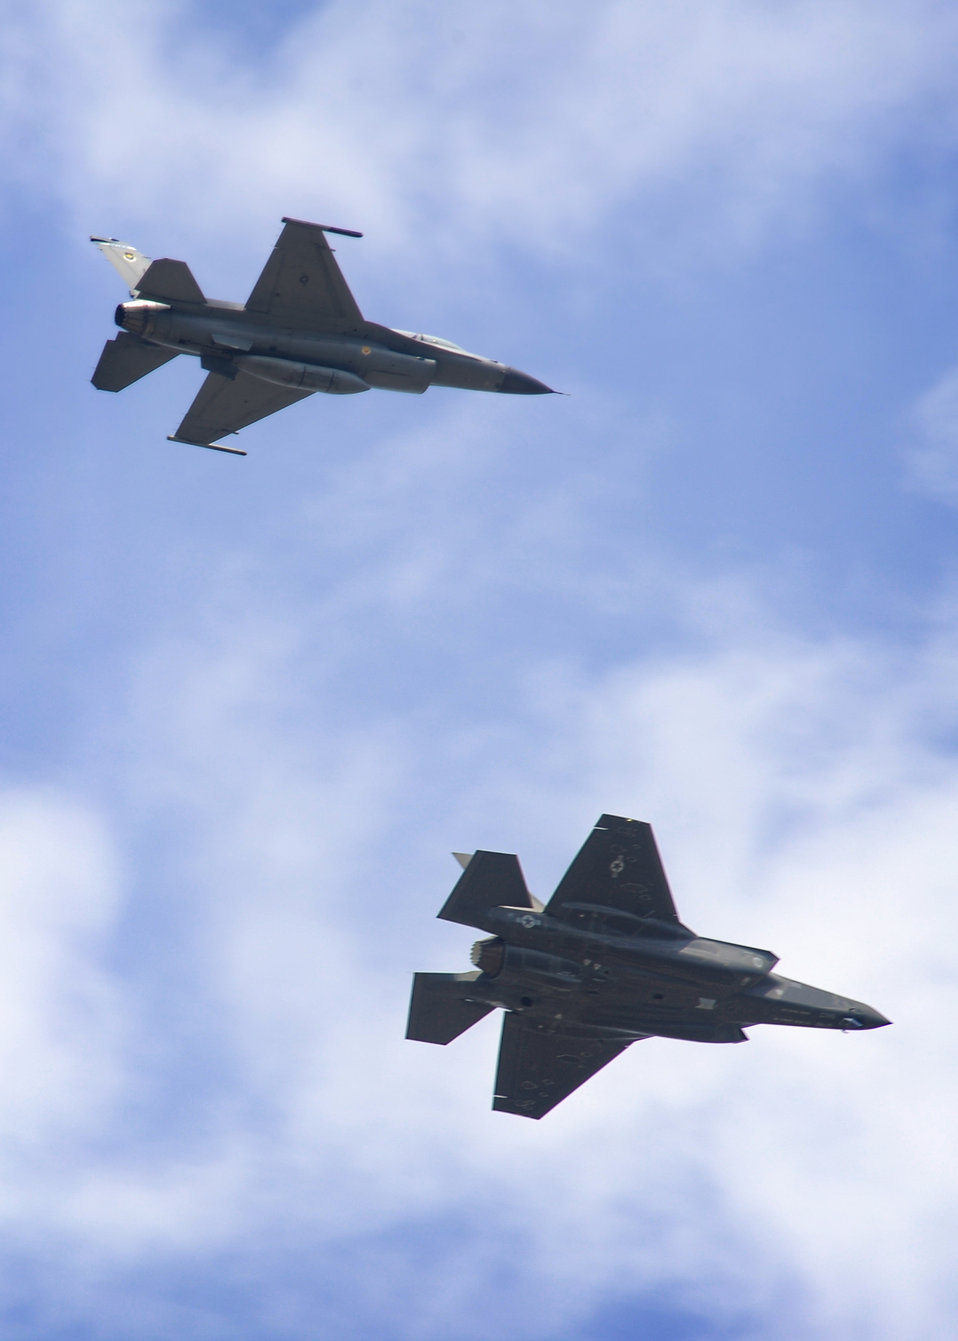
Eglin F-35 number increases to four

A 33rd Fighter Wing F-16 Fighting Falcon escorts an F-35A Lightning II joint strike fighter Aug. 31, 2011, en route to Eglin Air Force Base, Fla. More F-35s are scheduled to arrive at Eglin AFB in 2011, including at least one short takeoff/vertical landing variant, BF-6.